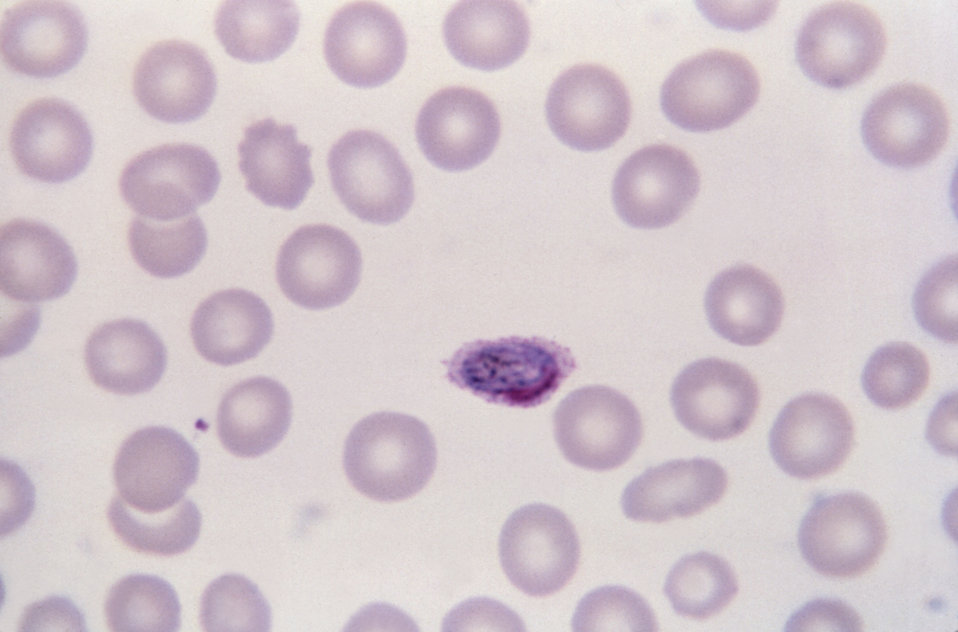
This thin film Giemsa stained micrograph depicts a mature Plasmodium ovale trophozoite.